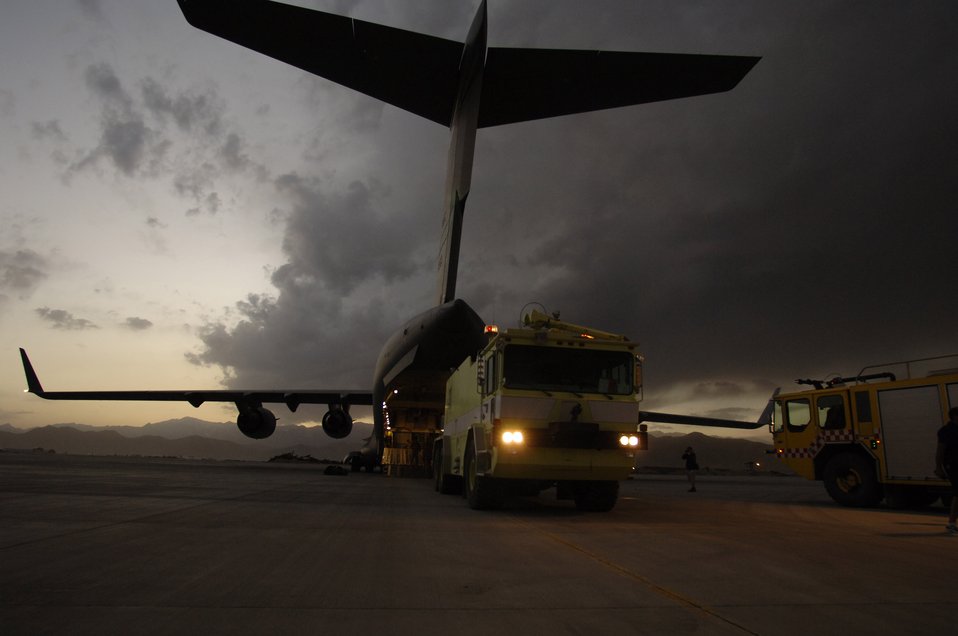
Special delivery

U.S. and coalition military members off-load a fire truck from a C-17 Globemaster III April 19 at Kabul Air Base, Afghanistan. The fire truck was donated by Baltimore city officials and destined for the Mazar-I-Sharif airport in northern Afghanistan.